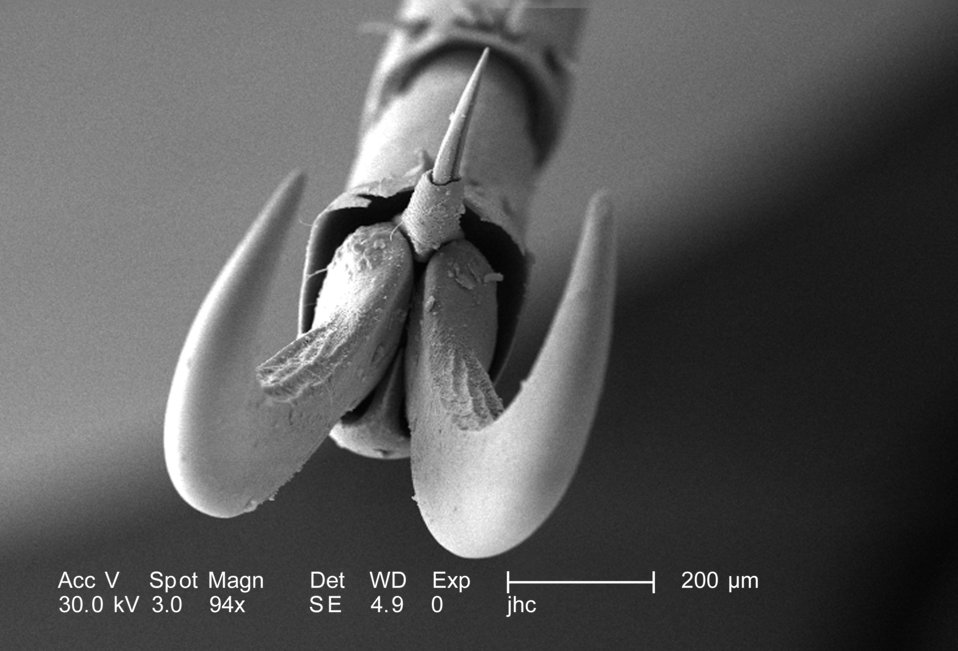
At a low magnification of 94X, this scanning electron micrograph (SEM) depicted a head-on view of the distal clawed tip of an adult 'figeater' beetle's, Cotinis mutabilis, leg. Phil 9943, 9944, and 9945 depict this anatomical appendicular relationship from its side. The insect leg is comprised of a variable number of segments, however, there are usually six which predominate, including the most proximal coxa, i.e., attaching the leg to the thorax, followed by the trochanter, femur, tibia, tarsus, and pretarsus, which in the case of this beetle is a claw with its spiked empodium.